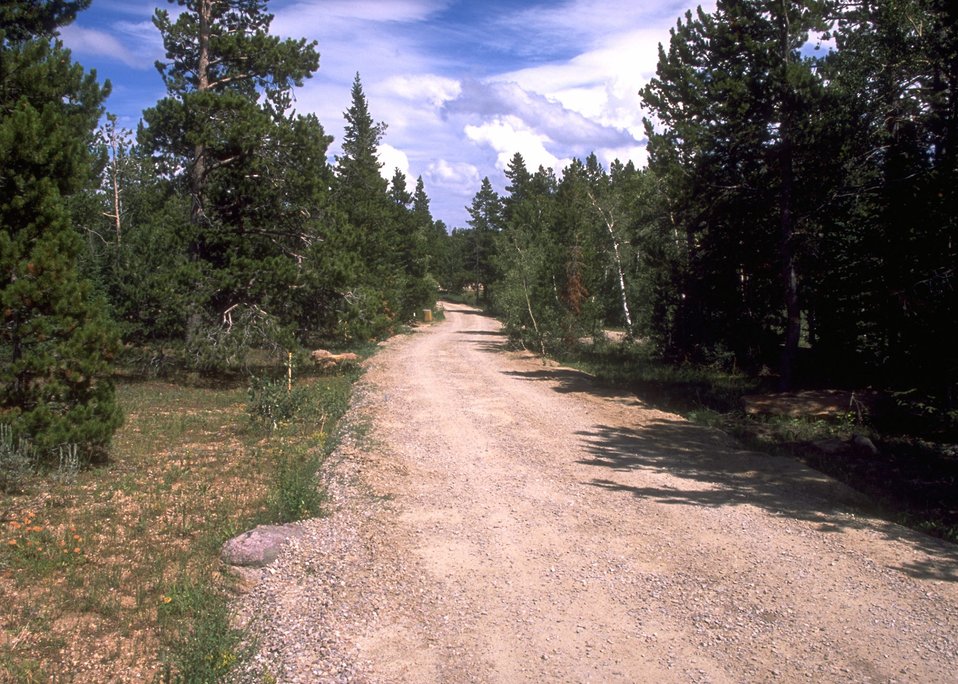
Road in Muddy Mountain Recreation Area, Casper Field Office.